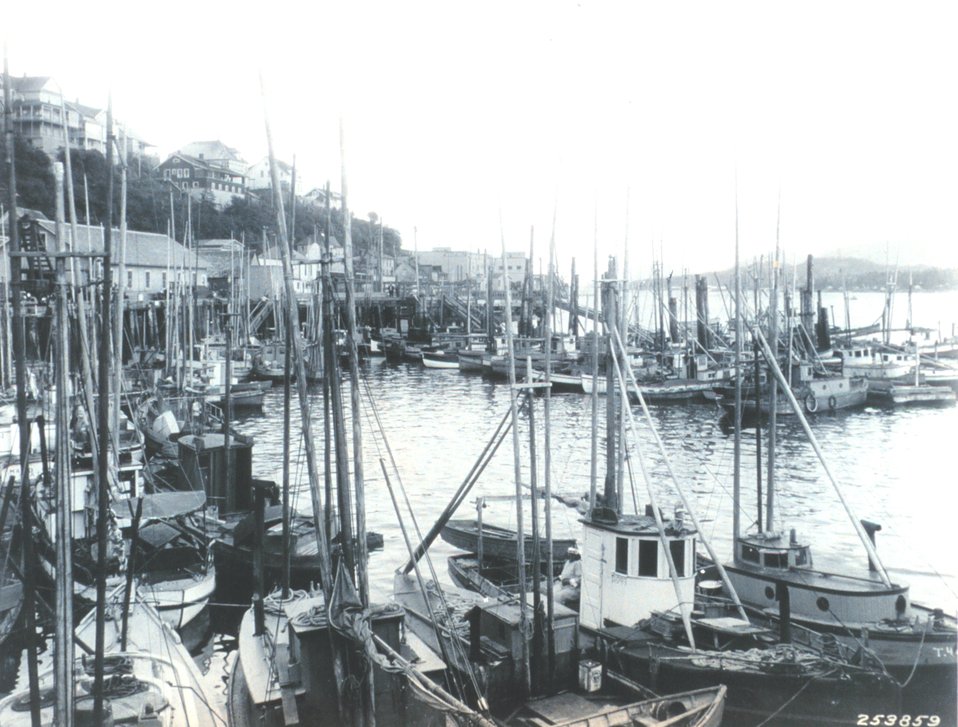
The fishing fleet at Ketchikan. Ketchikan was then the greatest fishing center on the Pacific Coast. Fishing in Alaska then accounted for 80 percent of all employment with most activity limited to the summer months. F&WS C-1191.